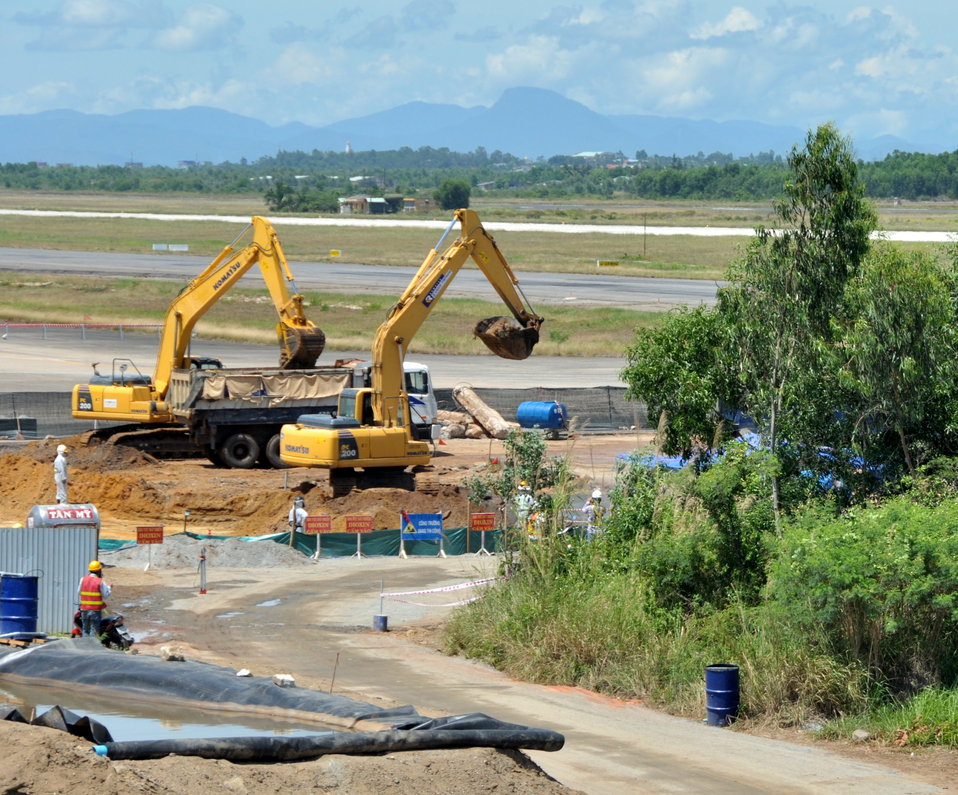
Environmental Remediation Progress at the Danang Airport site

Progress at the Remediation of Dioxin Contamination Project Site

Danang, Vietnam, June 5, 2013